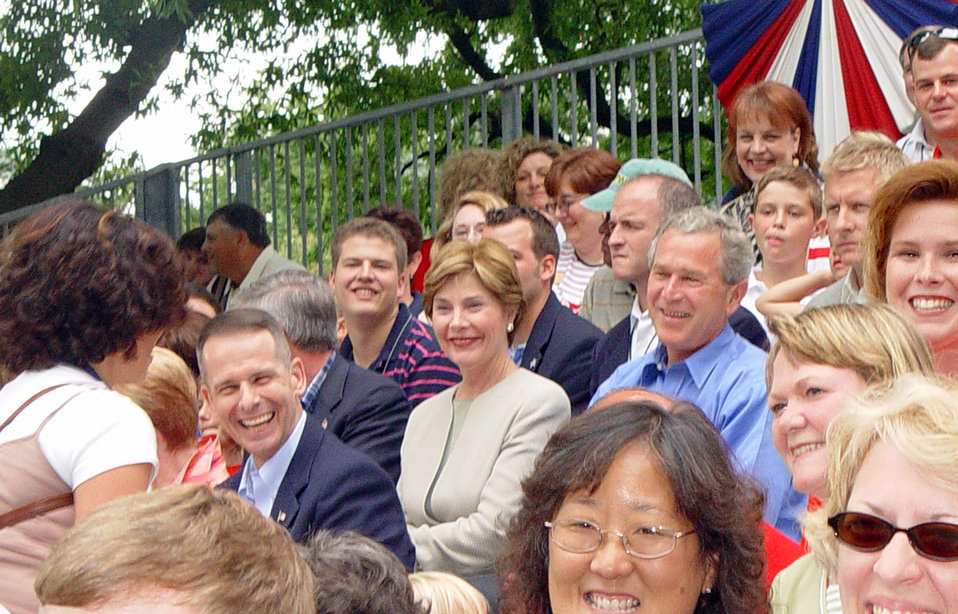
Play ball!

WASHINGTON -- First lady Laura Bush and President George W. Bush sit among fans in the stands at